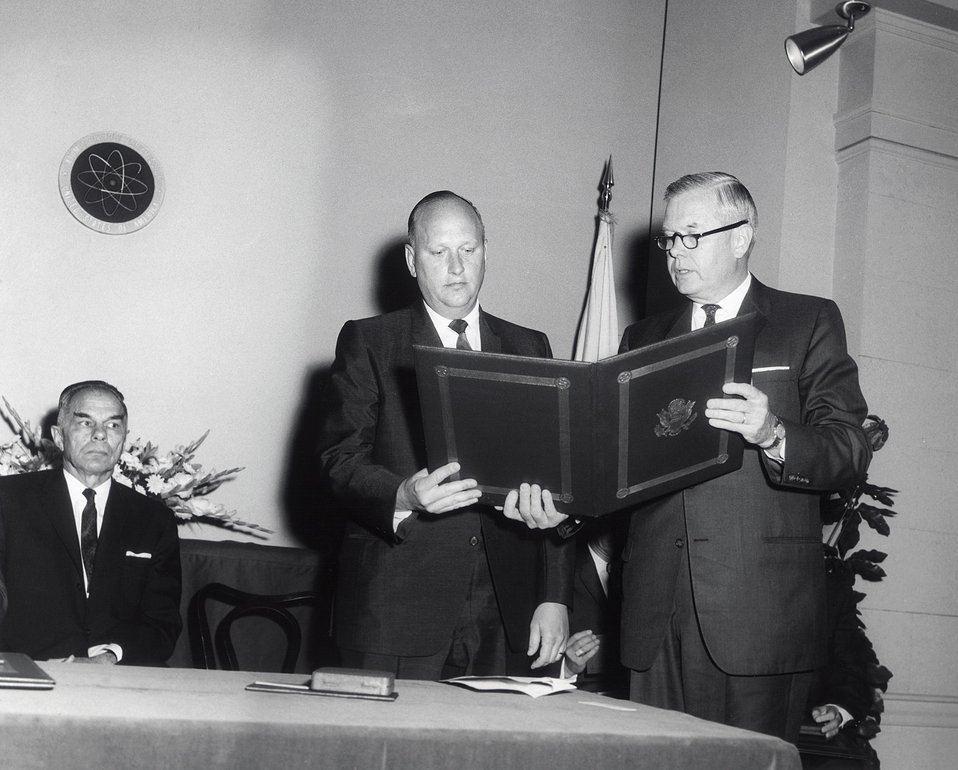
Seventh E.O. Lawrence Award Ceremony, April 27, 1966, Wash., D.C. L-R Chairman Seborg, Mr. Vanstrum, Commissioner Tape.